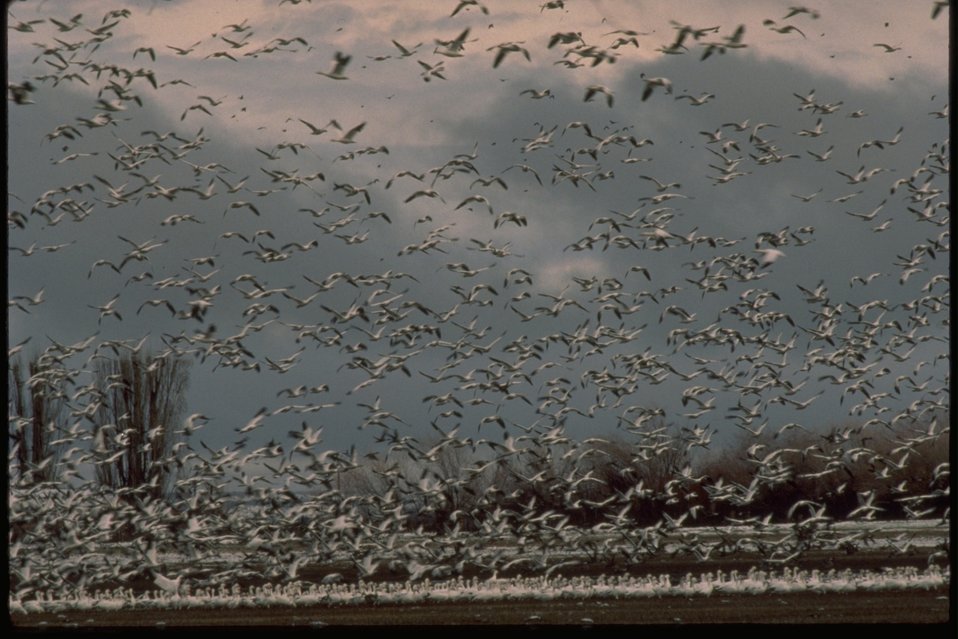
Hundreds of Snow Geese taking off.